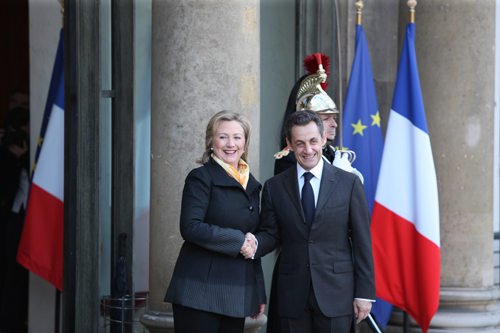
Secretary Clinton Is Greeted By French President Sarkozy

U.S. Secretary of State Hillary Rodham Clinton is greeted by French President Nicolas Sarkozy at the Elysée Palace in Paris, France, on March 14, 2011.